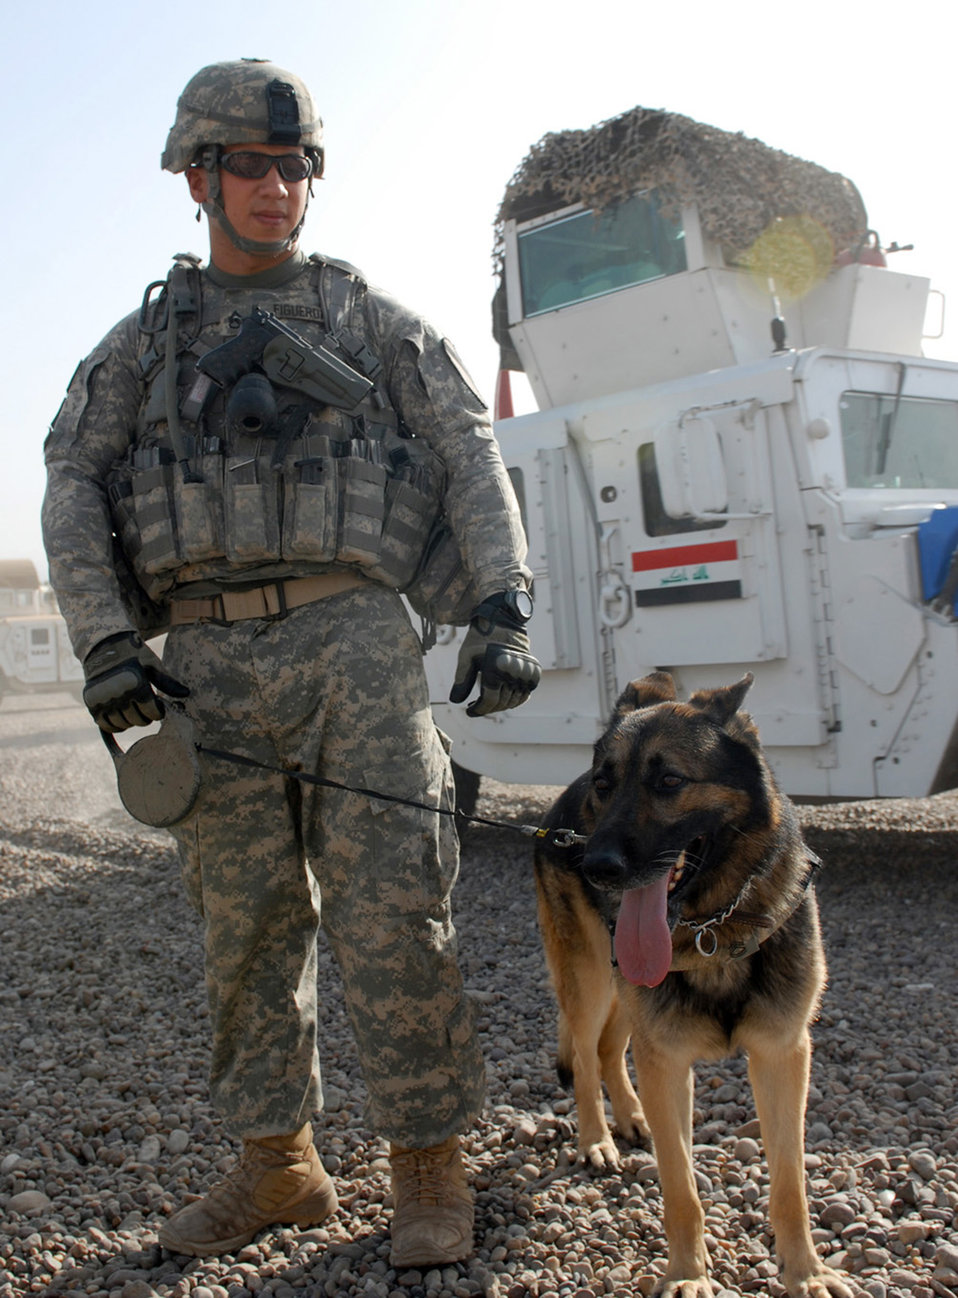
Military working dogs supplement sweep operation

Army Staff Sgt. Marcelo Figueroa, a military working dog handler assigned to the provost marshall's office at Camp Victory in Baghdad, waits with his German Shepherd, Lasso to begin a joint cache and weapons clearing mission June 13 in nearby Doura. Sergeant Figueroa is with the North Carolina National Guard's Company A, 252nd Combined Arms Battalion, 30th Heavy Brigade Combat Team.